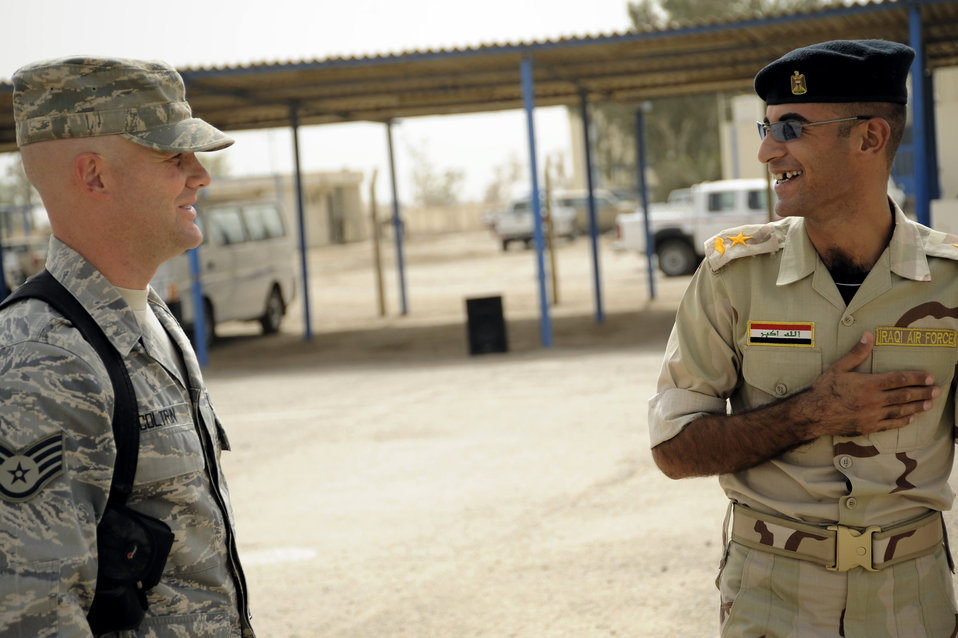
Passion for teaching drives military training instructor

Staff Sgt. Matthew Coltrin (left) talks about the training day with Iraqi air force Lt. Layth Sept. 28 at Al Taji Air Base, Iraq. Sergeant Coltrin advises the Iraqi military training instructors on how to conduct physical training, dorm set up, drill and lectures. Sergeant Coltrin is a military training instructor air adviser with the 370th Expeditionary Training Squadron. Lieutenant Laythe is an Iraqi military training instructor.